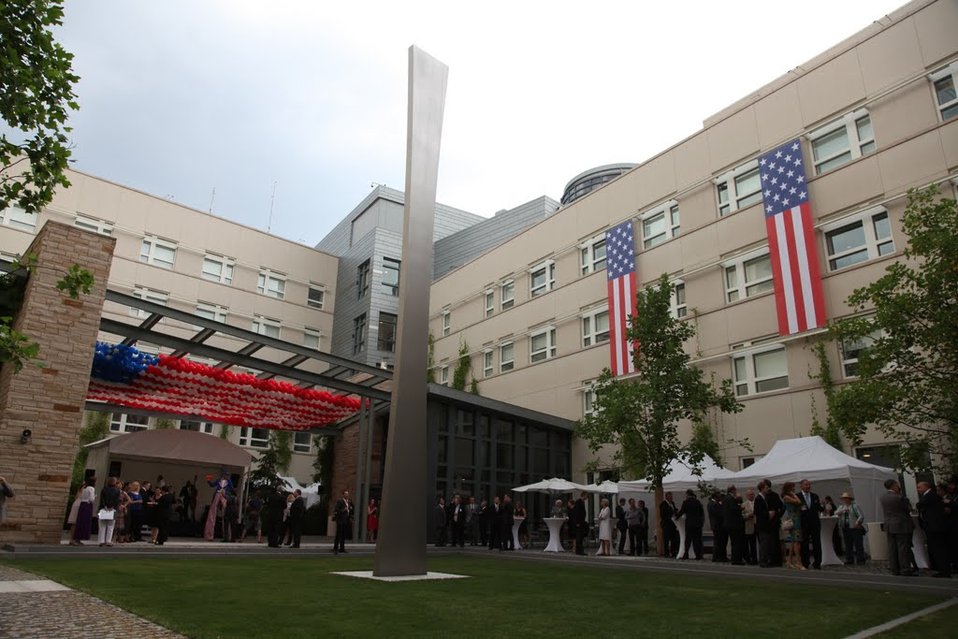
People Gather for an Indepedence Day Reception at Embassy Berlin

People gather in the festively decorated courtyard of the U.S. Embassy in Berlin, Germany, during an Independence Day Reception In Berlin, Germany, on July 4, 2010.